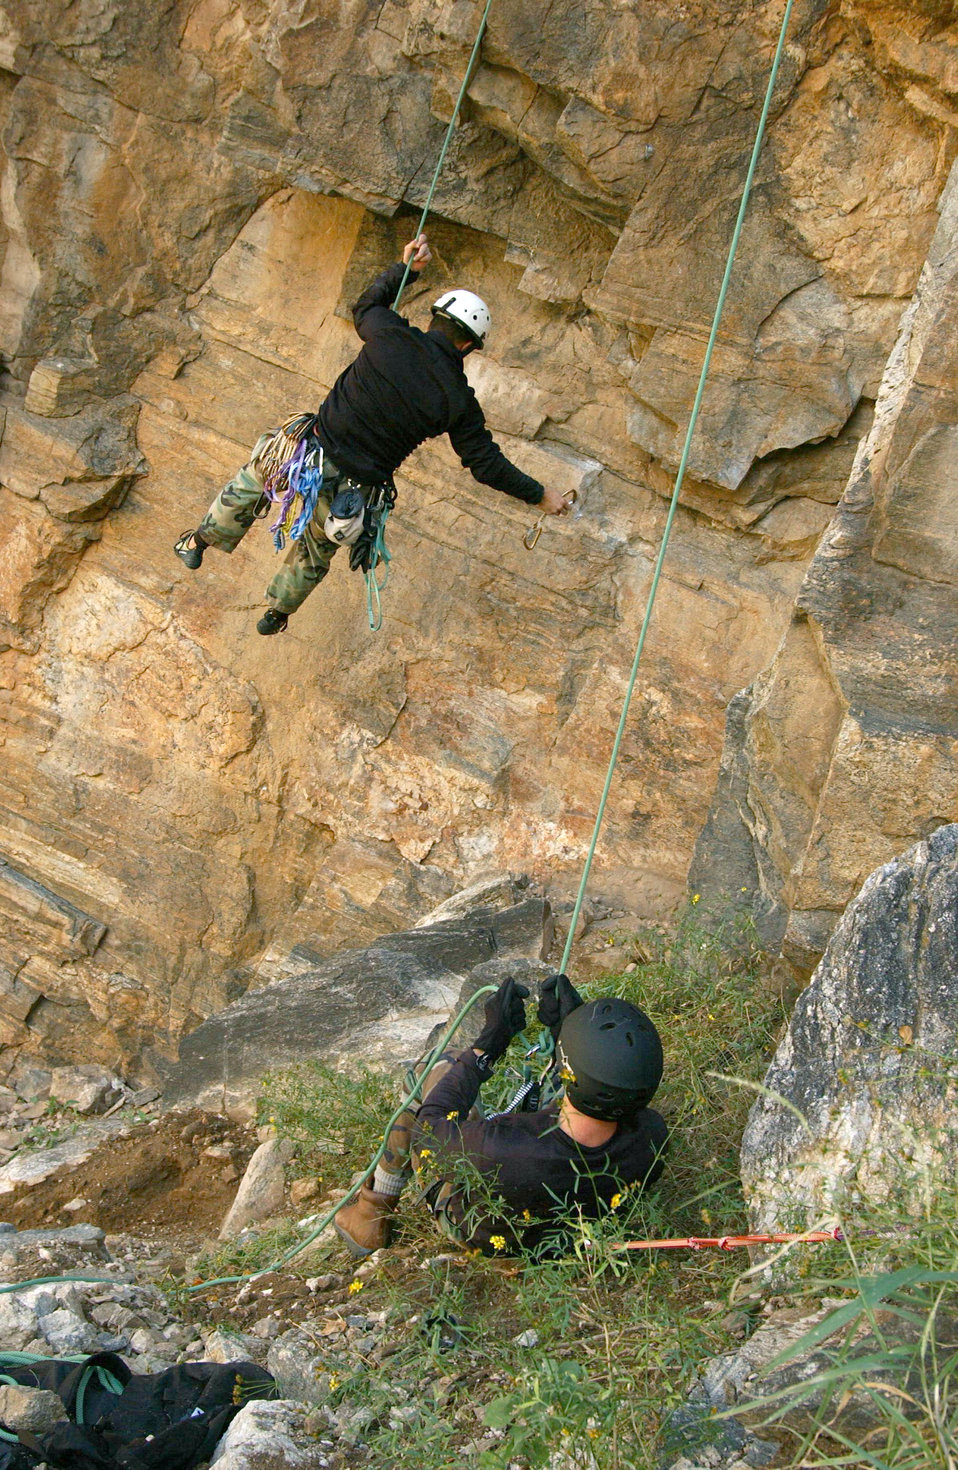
Climb time

TUSCON, Ariz. -- Capt. Stephen Savell (bottom) anchors Senior Airman Kenny Ortega as they climb Mount Lemmon here during a training mission. The Airmen are pararescuemen assigned to the 563rd Rescue Group at nearby Davis-Monthan Air Force Base.